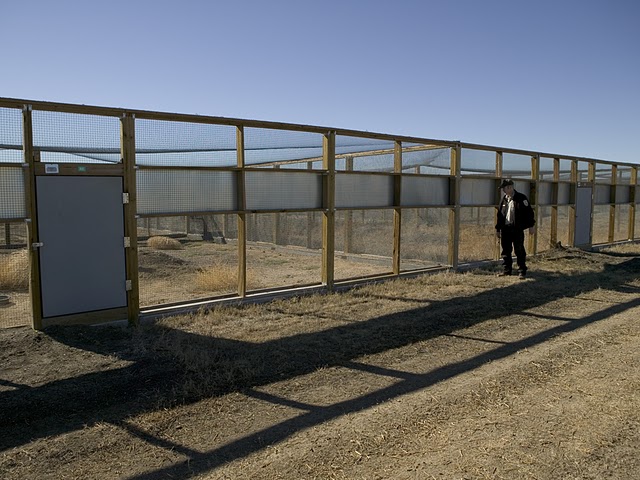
Preconditioning pen at the National Black-footed Ferret Conservation Center in Colorado. Preconditioning is an important pre-cursor to reintroducing captive bred black-footed ferrets into the wild. Ferrets are placed in outdoor pens for a minimum of 30 days. While in these pens, they are exposed to natural burrow systems and have the opportunity to encounter live prairie dogs.